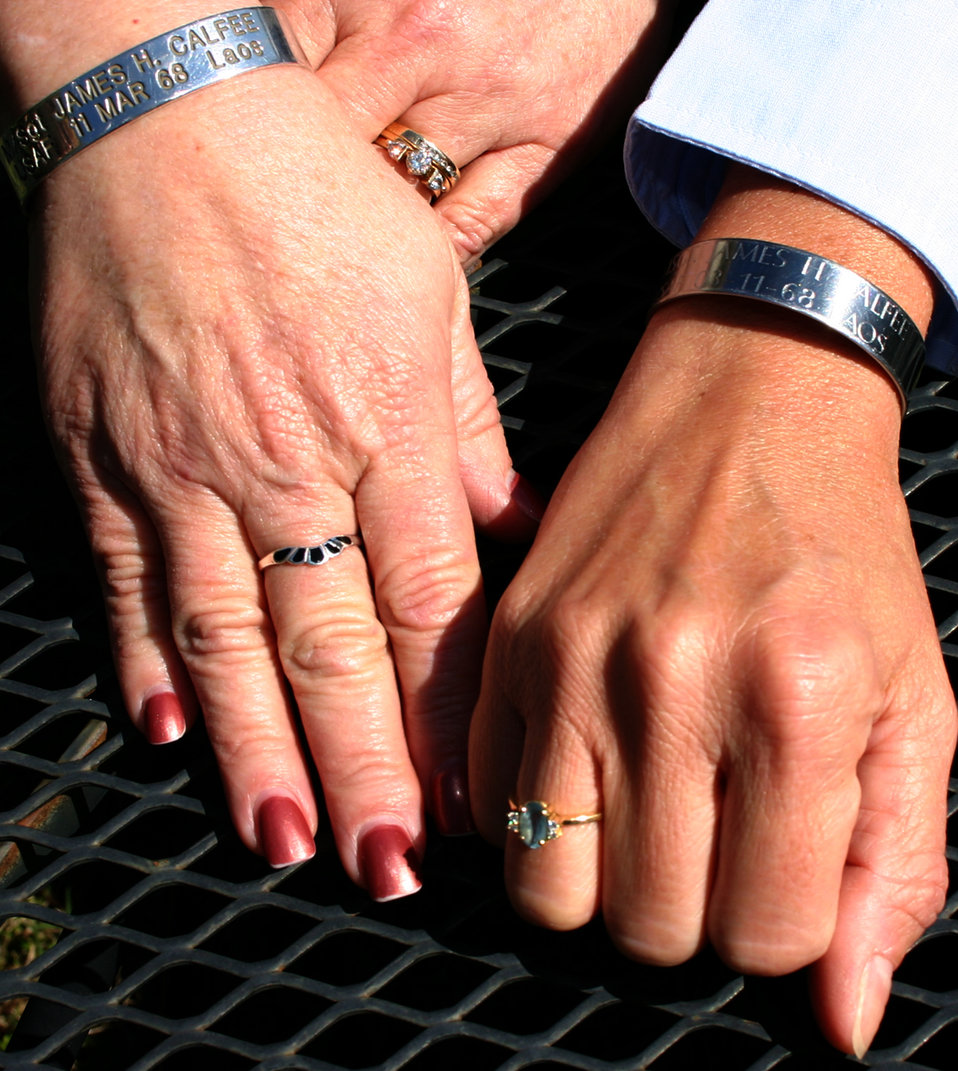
Bracelet draws Airmen, family together

RANDOLPH AIR FORCE BASE, Texas -- Senior Master Sgt. Cheryl Wells and Debra Morris show their